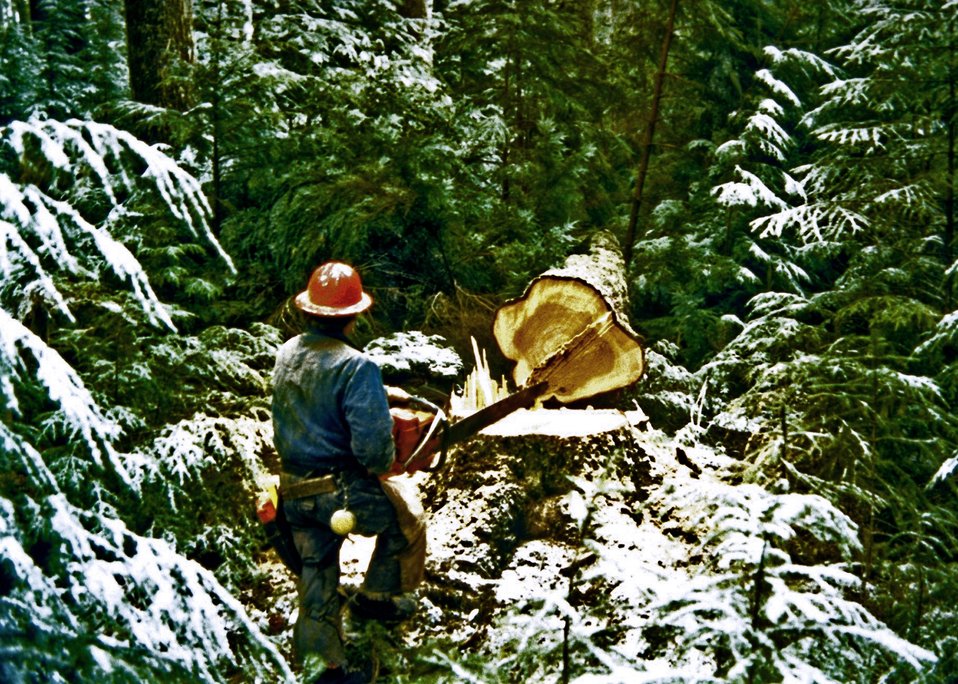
3-P Fallers at Buyer's Deadhorse Timber Sale.